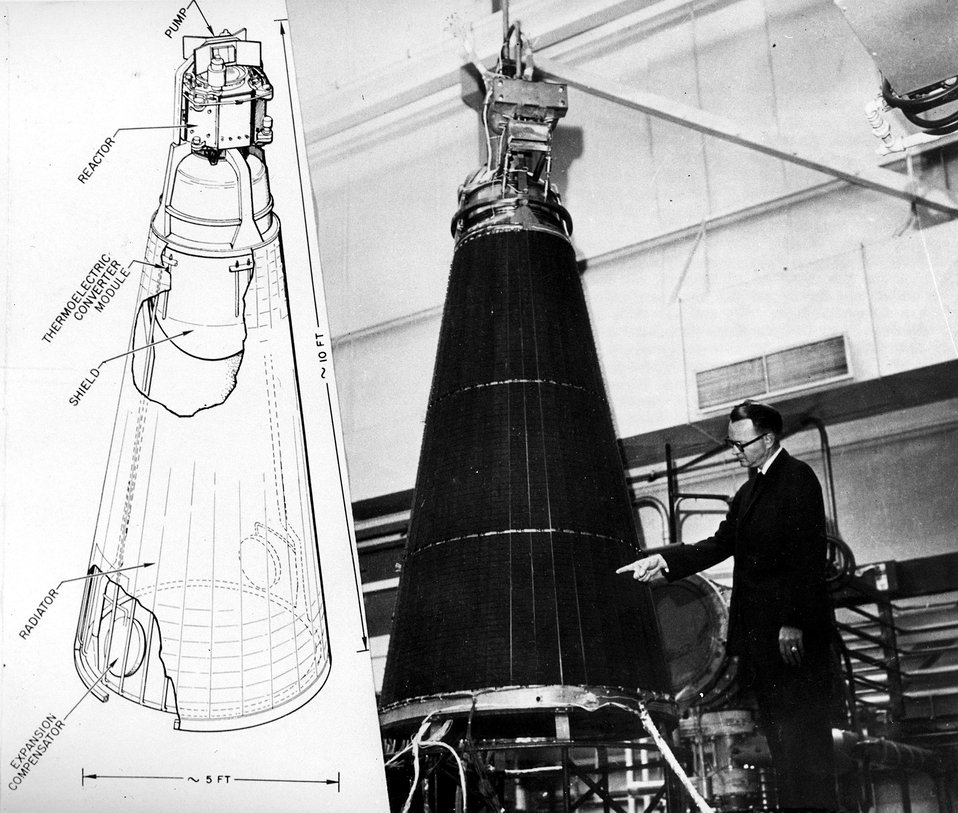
The SNAP 10A reactor, which will produce 500 watts of auxiliary power for equipment and instrumentation in space vehicles and satellites, expected to launch during 1964.